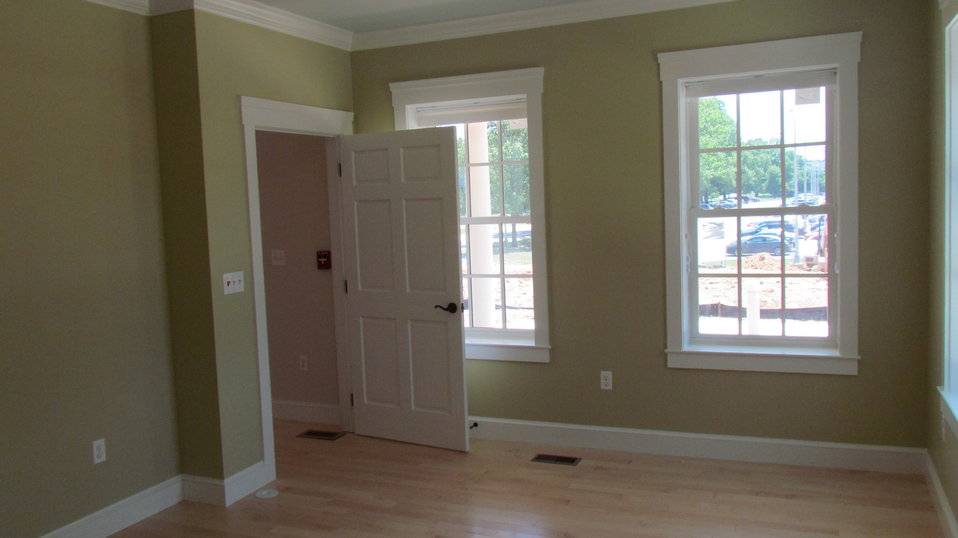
Picture showing interior of office/bedroom located on the first floor of facility on the southwest corner.